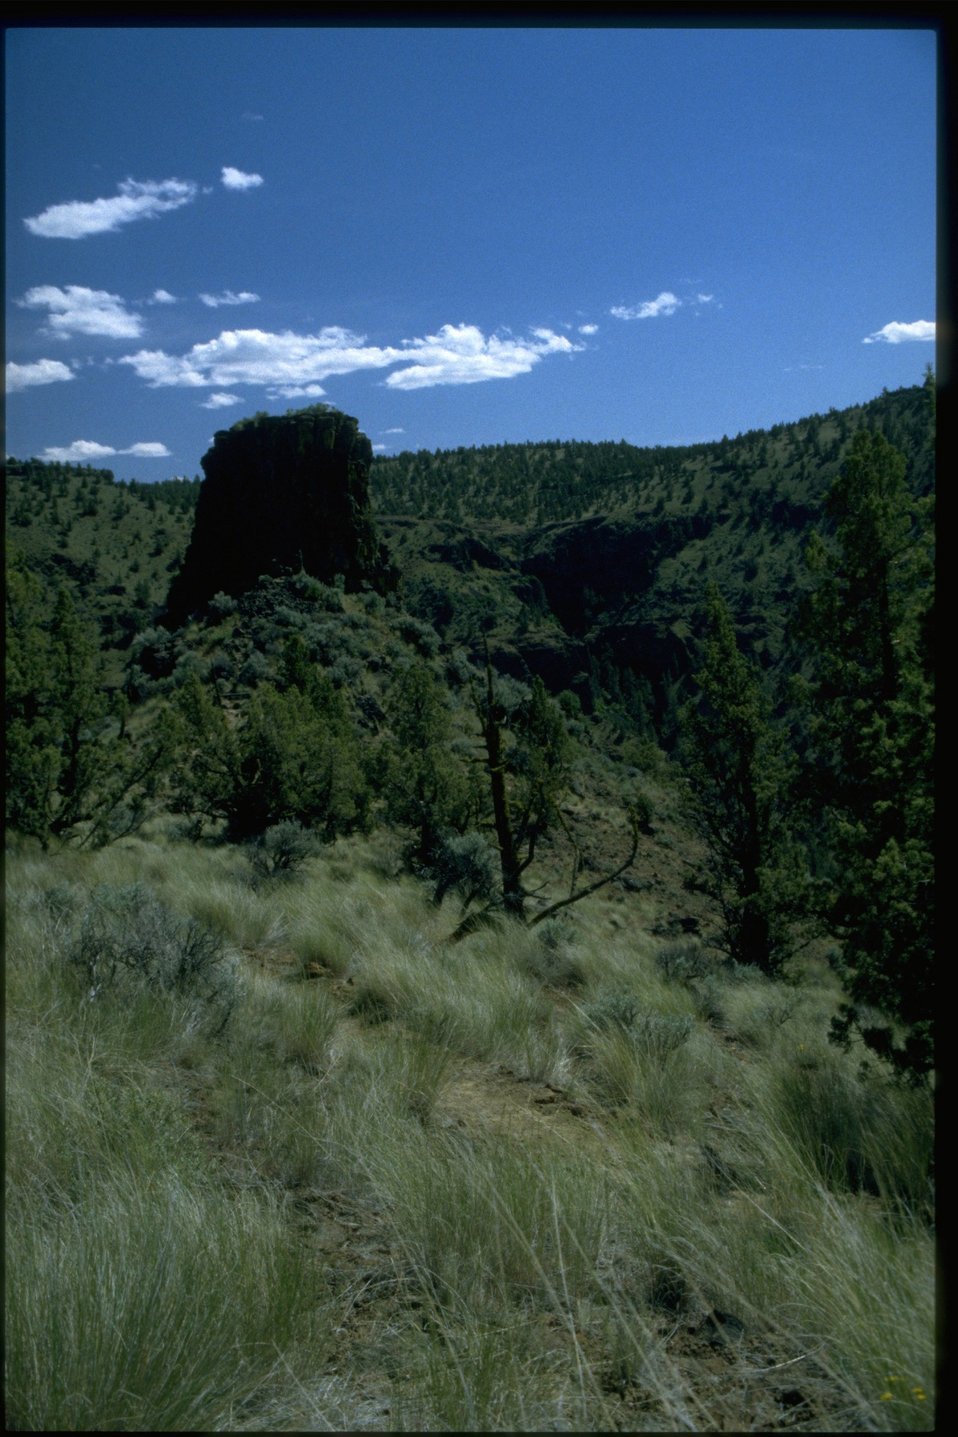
Farshot of Chimney Rock.